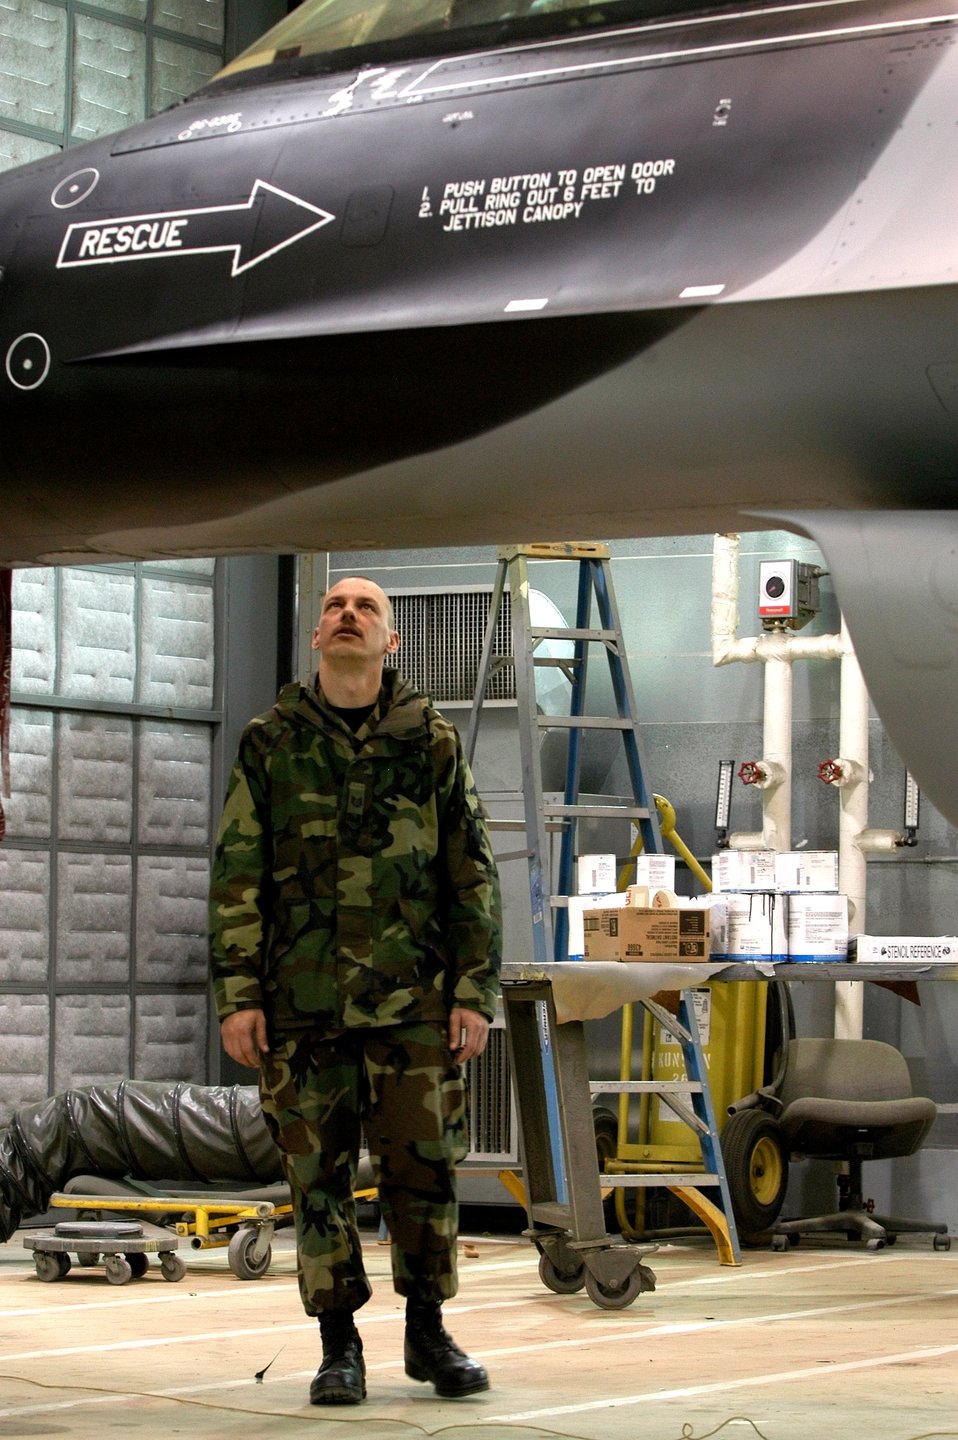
Kunsan Airmen paint arctic F-16 for Eielson

Tech. Sgt. Brian Coffel looks over a newly painted arctic scheme F-16 Fighting Falcon Nov 30 at Kunsan Air Base, South Korea. Sergeant Coffel and other members of the 8th Maintenance Squadron painted the aircraft in preparation for an upcoming Kunsan/ Eielson F-16 swap.